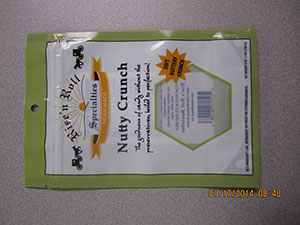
RECALLED – All Varieties of Donuts, Cinnamon Donut Holes, and Mixed Nut Candy

January 17, 2014 – Product Recall – Rise’N Roll Bakery Issues Allergy Alert on Undeclared Egg in All Their Donut Varieties and Undeclared Peanuts in Nutty Crunch.